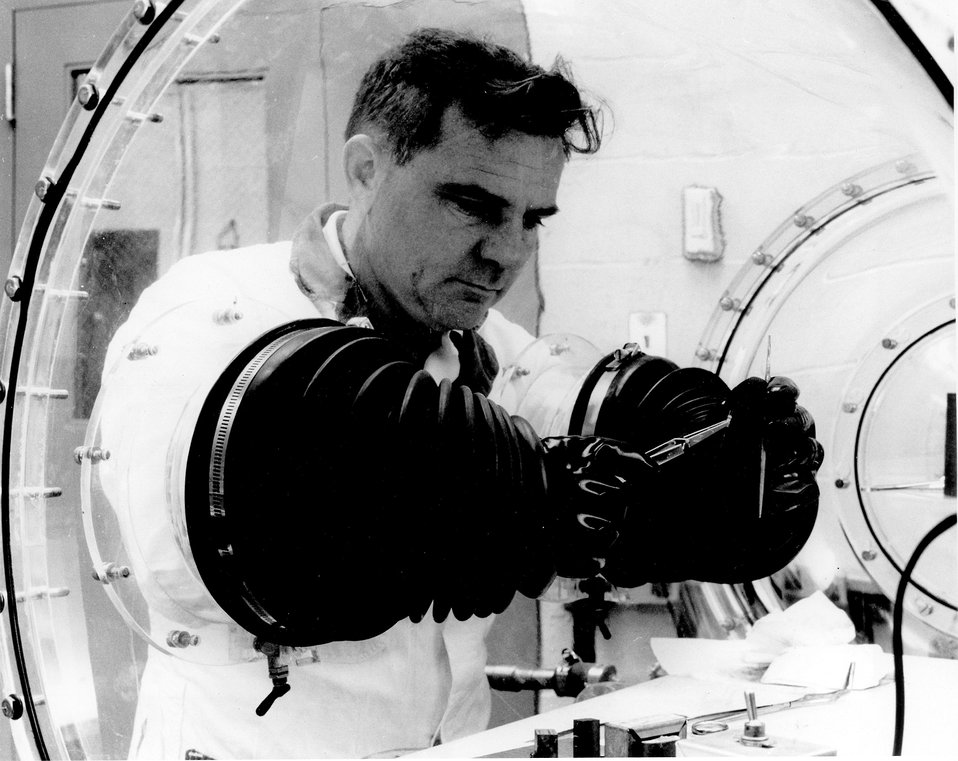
Mildly radioactive materials are handled directed and safely in a glove box.